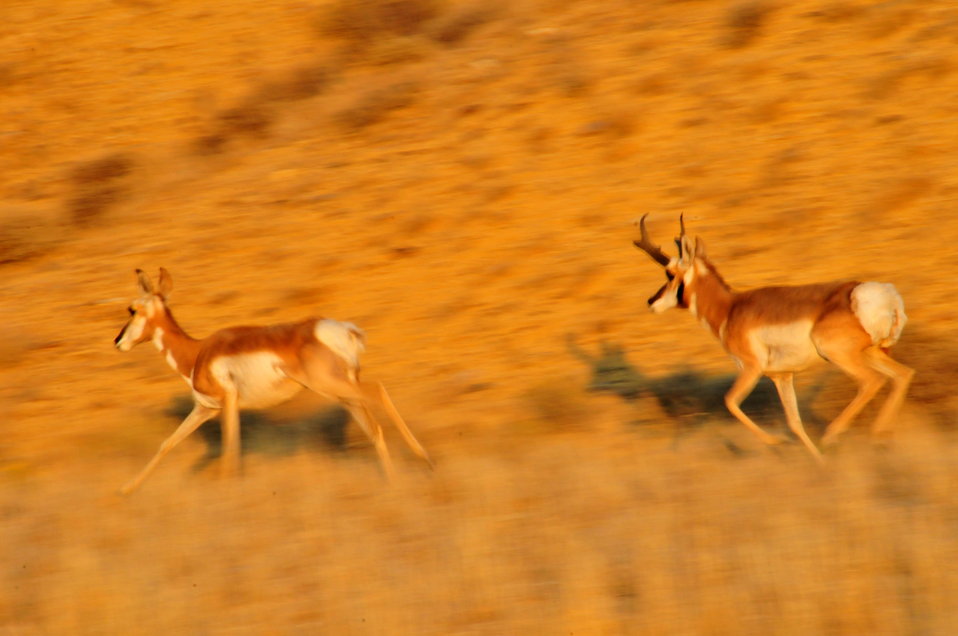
Pronghorn doe and buck running Seedskadee NWR